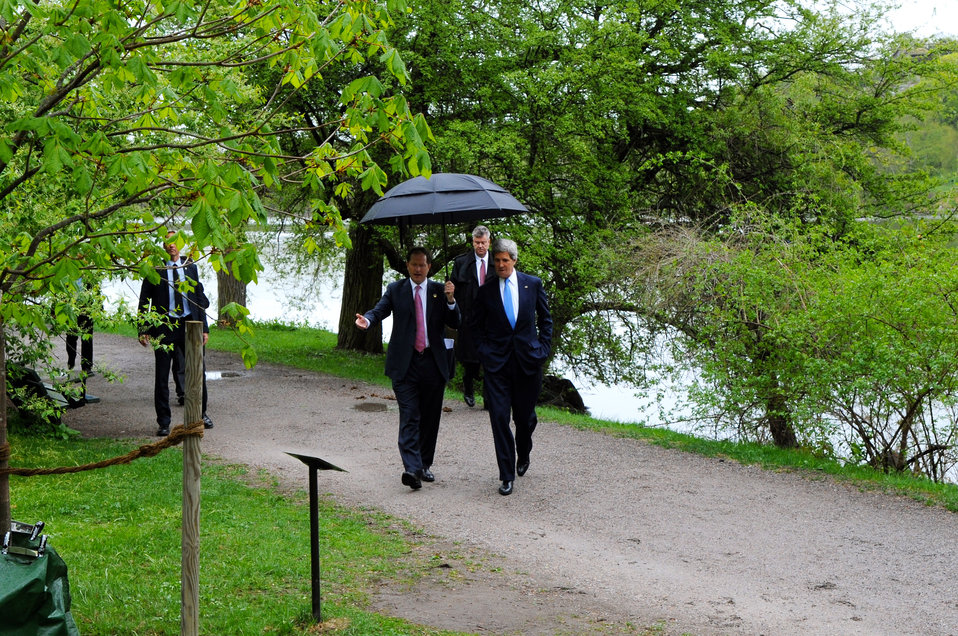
Ambassador Brzezinski Shows Secretary Kerry the Wallenberg Memorial Tree

U.S. Ambassador to Sweden Mark Brzezinski shows U.S. Secretary of State John Kerry the tree planted by the U.S. Embassy in Stockholm, Sweden, in memory of Raoul Wallenberg, the Swedish diplomat who saved thousands of Jews from the Holocaust, on May 14, 2013.